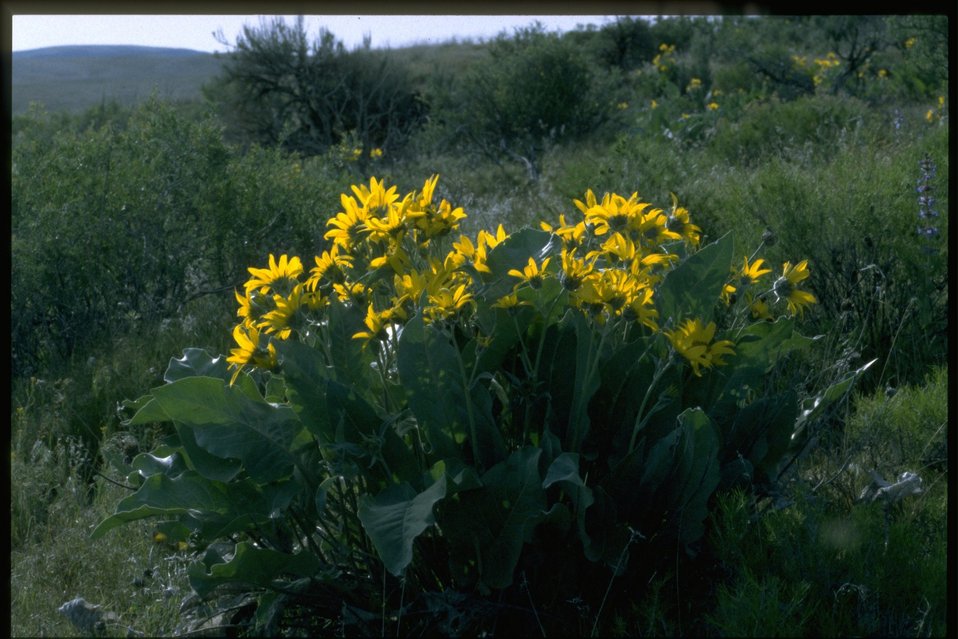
Arrowleaf Balsam Root (Balsamorhiza sagittata) habitat.